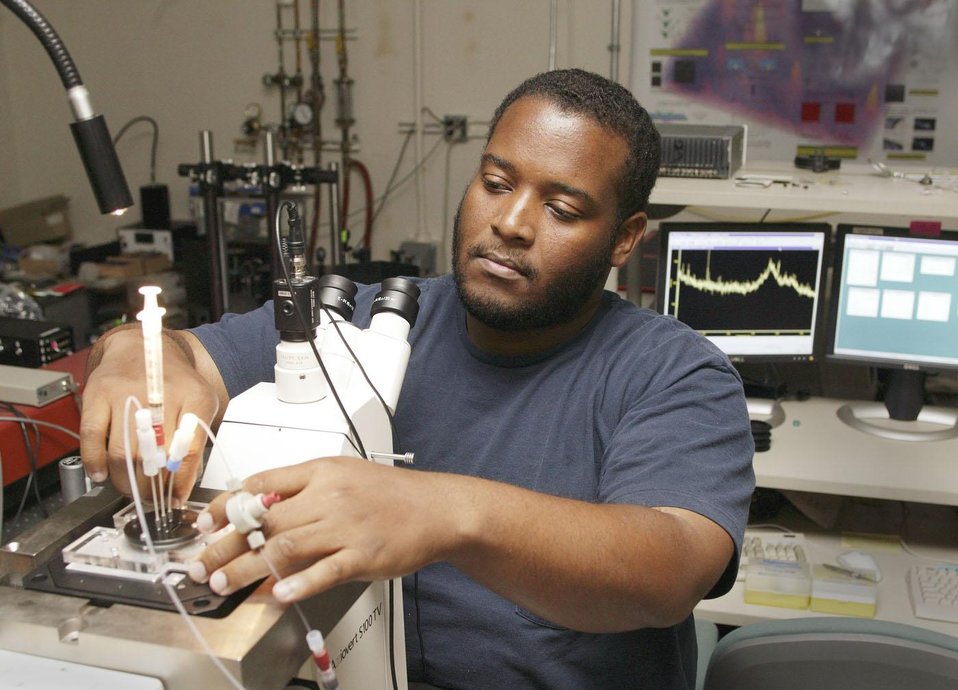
GRADUATE STUDENT FROM FISK UNIVERSITY, TENNESSEE, USING RAMEN SPECTROSCOPY AT LAWRENCE LIVERMORE NATIONAL LABORATORY.

THE GRADUATE STUDENT, GEORGE TURNER, IS USING RAMEN SPECTROSCOPY TO STUDY AN ANTIFREEZE PROTEIN FOUND IN ARCTIC FISH AS PART OF A SUMMER INTERN PROGRAM AT LLNL UNDER THE LAB'S RESEARCH COLLABORATIONS PROGRAM FOR HISTORICALLY BLACK COLLEGES AND UNIVERSITIES AND MINORITY INSTITUTIONS.